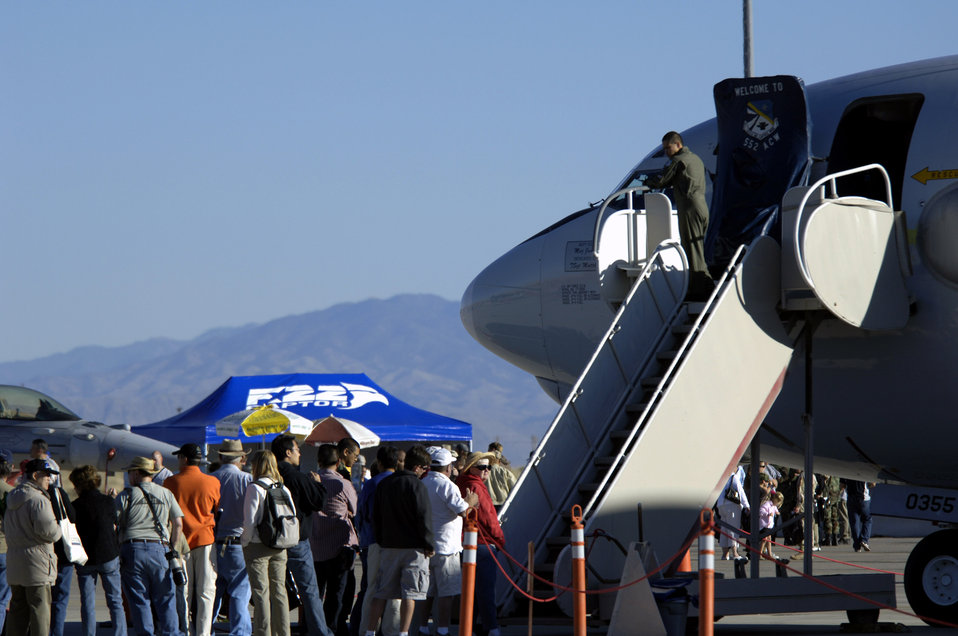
Holloman Air and Space Expo

Spectators at the Holloman Air and Space Expo wait in line Oct. 27 to see the inside of an E-3 Sentry airborne warning and control system. The expo showcased Air Force capabilities and the 49th Fighter Wing.